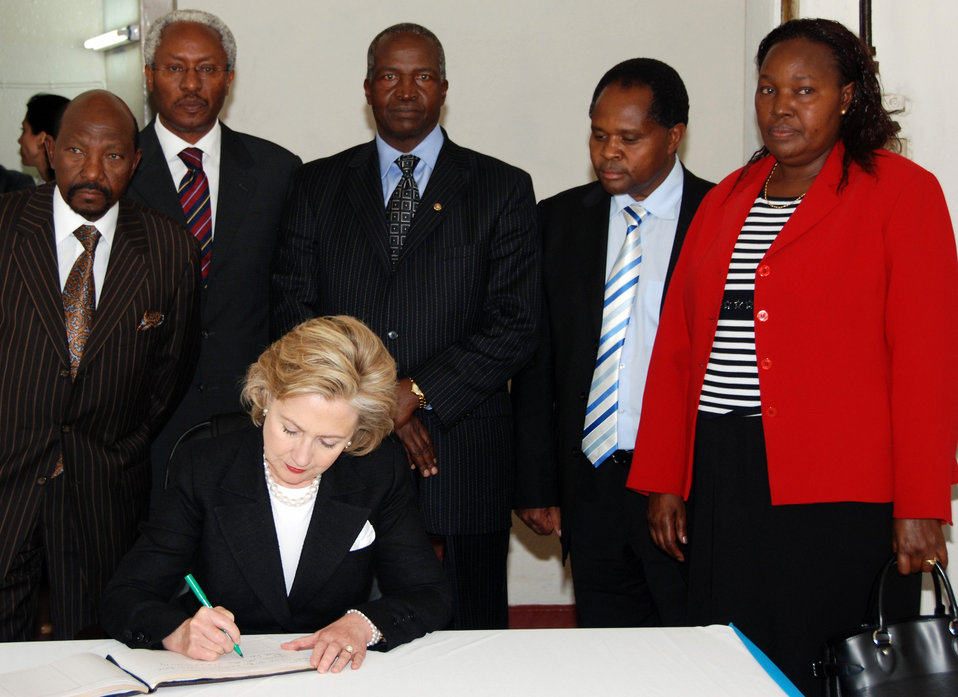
Secretary Clinton Visits Nairobi University

U.S. Secretary of State Hillary Rodham Clinton signs a document at the University of Nairobi in Nairobi, Kenya August 6, 2009.